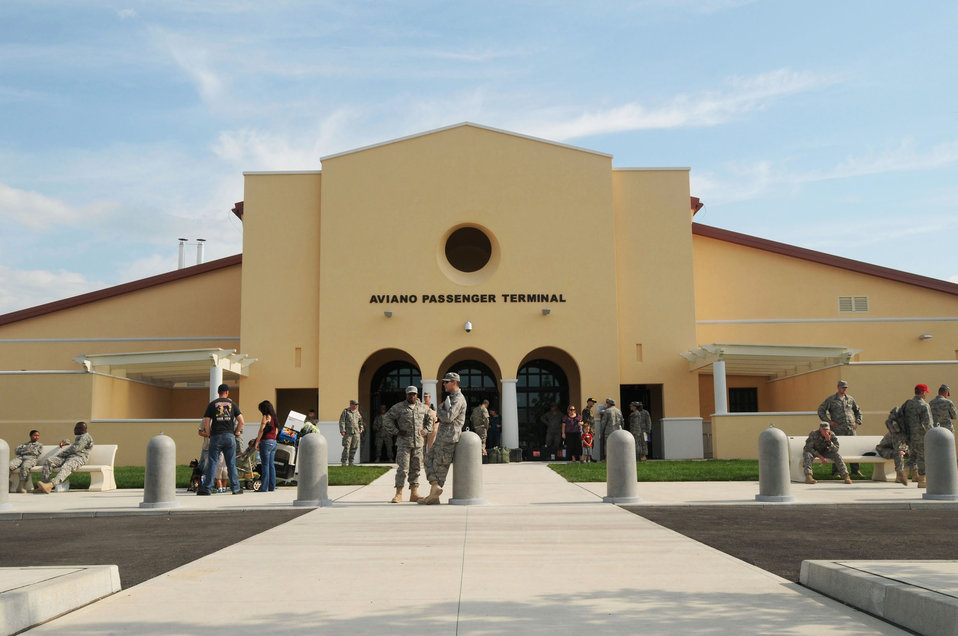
Aviano Airmen open doors to new NATO terminal

Military servicemembers returning from deployment catch a breath of fresh air outside the main entrance of the 724th Air Mobility Squadron's new passenger and air freight terminal while the military chartered aircraft carrying them home is serviced Sept. 11, 2009, at Aviano Air Base, Italy. Passenger service agents from the 724th AMS began processing passengers through the new facility Sept. 10. Volunteers supporting Operation Yellow Ribbon provide snacks and other goodies to servicemembers transiting through the terminal.